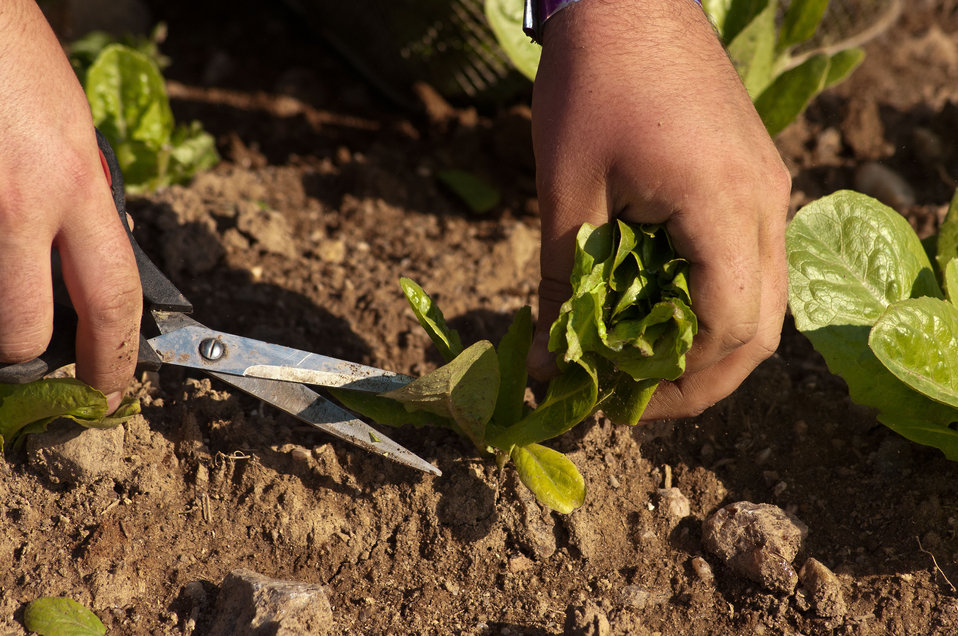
Andrew Myers gently harvest baby-lettuce leaves forManakintowne Specialty Growers, a 21-acre farm in Powhatan County, Virginia, on Friday, May 6, 2011. The farm where Jo Pendergraph, her family and team raise specialty produce for chefs and markets of Richmond, Charlottesville and Williamsburg, VA area. This includes the online food hub of Lulus Local Food served by the Fall Line Farms cooperative. This is one of the farms that chefs get those seemingly unique greens such as French Sorrel, Pea Shoots, Frisee, Tat soi, Mizuna, Pink/green radish shoots, Sunflower shoots, Baby red mustard, Tuscan Kale, Beet greens. All harvested by hand and scissors. As well as micro greens such as Pak choi, Tat soi, Mizuna, Purple kohlrabi, Shungiku (edible chrysanthemum), Ruby chard, Purple/Daikon/Triton radish, Red amaranth and Bull's Blood Beet. Edible flowers such as African Blue Basil, Nasturtiums, Johnny Jump Ups, and Chive blossoms Dianthus (pinks) are grown here. The seasonal choices are listed by suppliers and ordered by members on Lulus Local Food website, the food is distributed to pick-up points in the Richmond, VA area. They also offer a wide variety of household food staples and specialty fruits, vegetables, meats, soaps, eggs, cheeses, flowers, honey, pastas, sauces, syrups, baked goods, mushrooms, flour and grains from and for the Richmond. VA area.